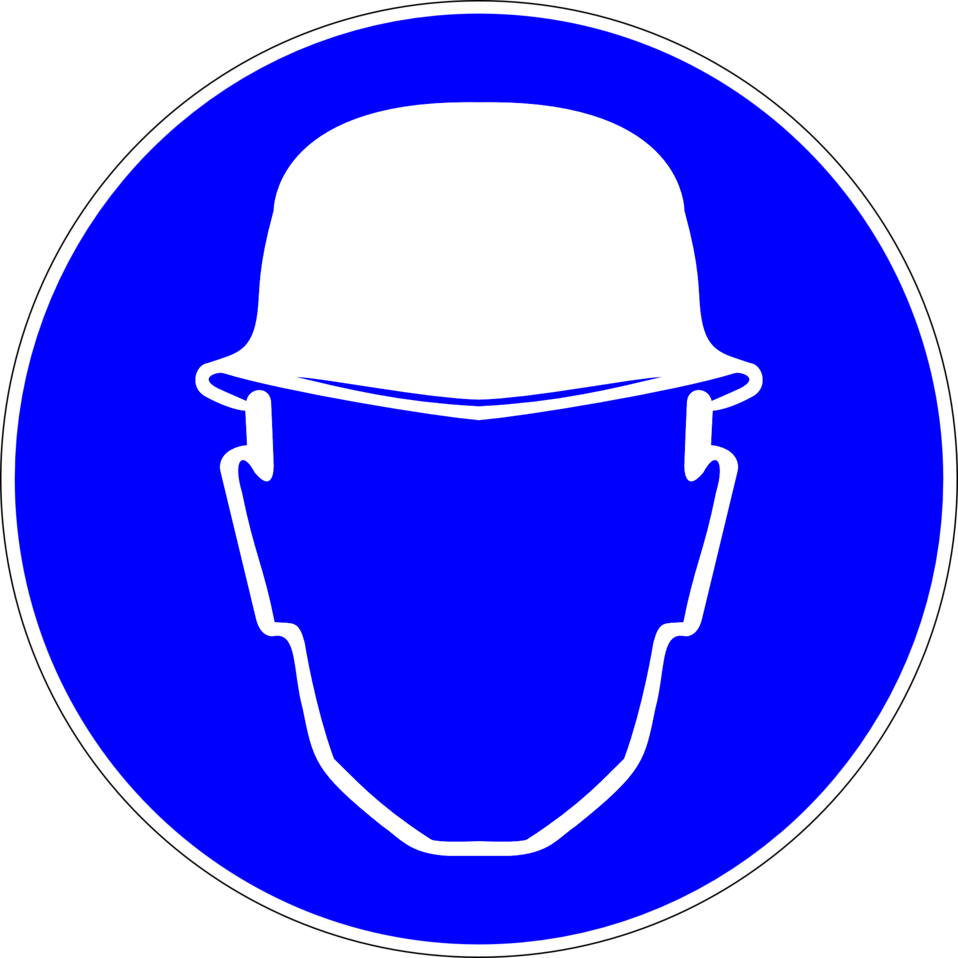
Deutsch: Kopfschutz benutzen, Gebotszeichen D-M002 nach DIN 4844-2